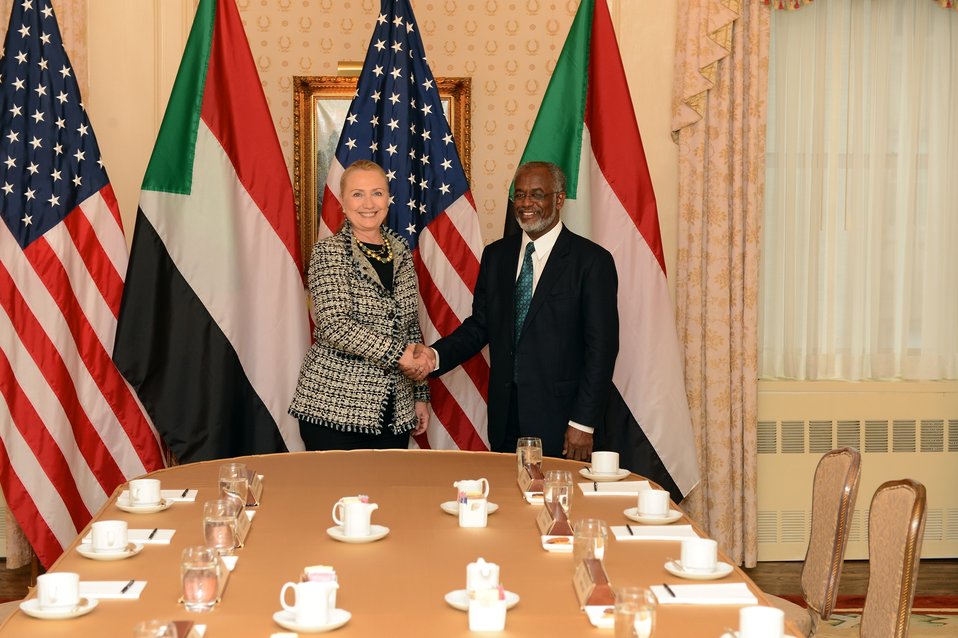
Secretary Clinton Meets With Sudan Foreign Minister Karti

U.S. Secretary of State Hillary Rodham Clinton holds a bilateral meeting with Sudan Minister of Foreign Affairs His Excellency Mr. Ali Ahmed Karti, at the Waldorf Astoria in New York City, September 28, 2012.